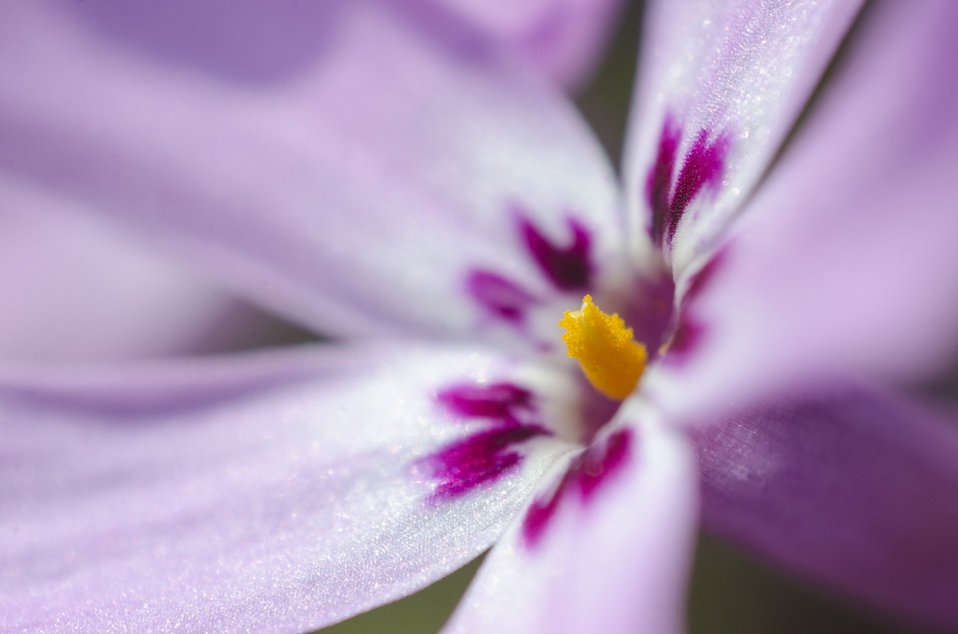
Flower macro

Macro photo of a flower.